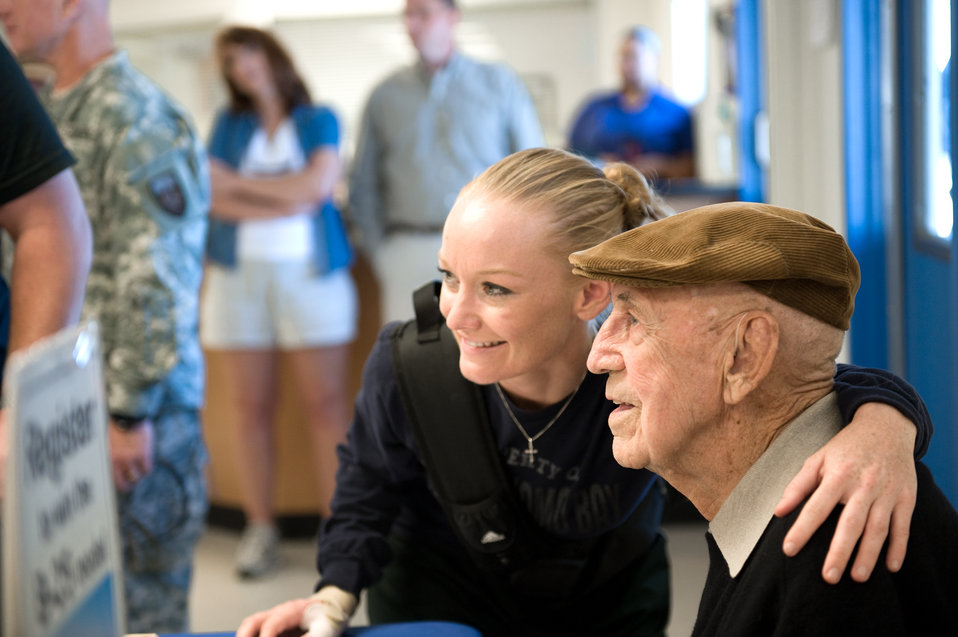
Warrior Flight

Army National Guard Sgt. Kisha Makerney smiles with retired Doolittle Raider Lt. Col, Dick Cole during a day dedicated to disabled veterans on Nov. 5, 2009, in San Antonio. The Disabled American Veterans Flight Team coordinated a flight day for wounded warriors and their families to fly in historic military aircraft and experimental acrobatic planes at the San Antonio International Airport. Sergeant Makerney is a Fort Townsend, Okla., native currently assigned to the Warrior Transition Unit at the San Antonio Military Medical Center. Colonel Cole and aircrews came from across the region to participate in the Randolph Air Force Base Forging the Future Air Show on November 7-8. Colonel Cole was Col. Jimmy Doolittle's co-pilot for the World War II Doolittle raid on Tokyo.